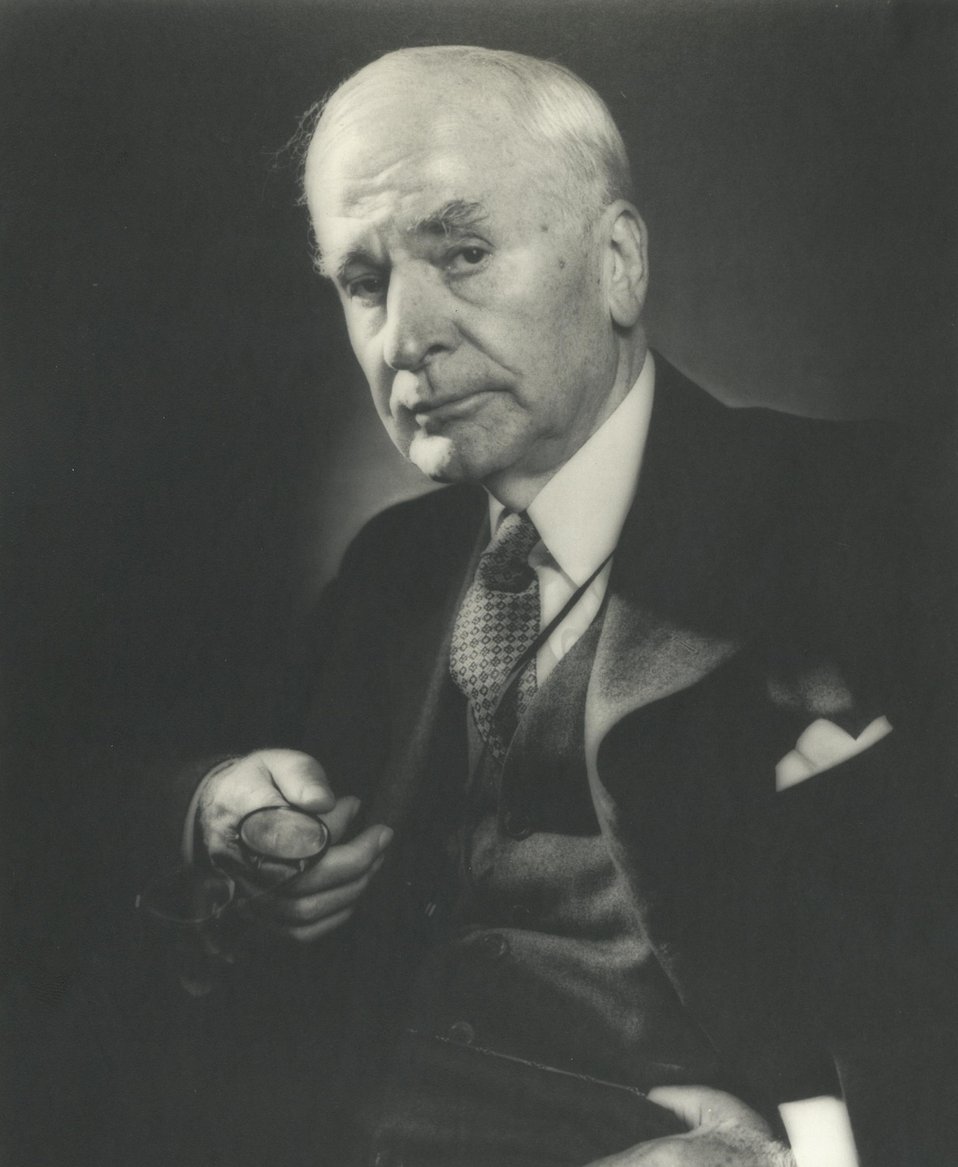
Cordell Hull, U.S. Secretary of State, March 4, 1933 to November 30, 1944